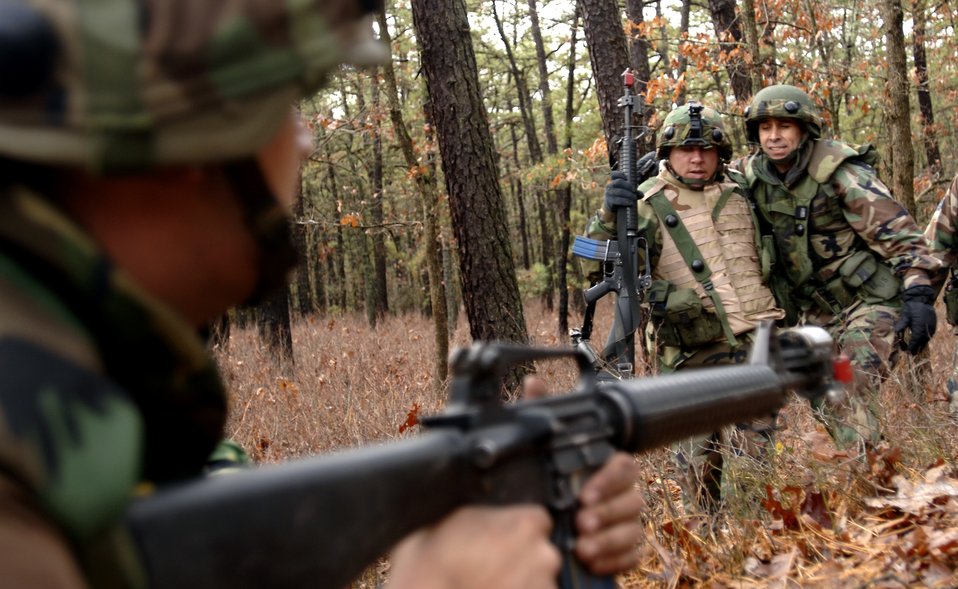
Air Force training makes Airmen safer, more aware

Capt. Ken Hall aids in recovering a simulated wounded student while under fire during the Contingency Skills Training course at the Air Mobility Warfare Center at Fort Dix, N.J., Nov. 14.